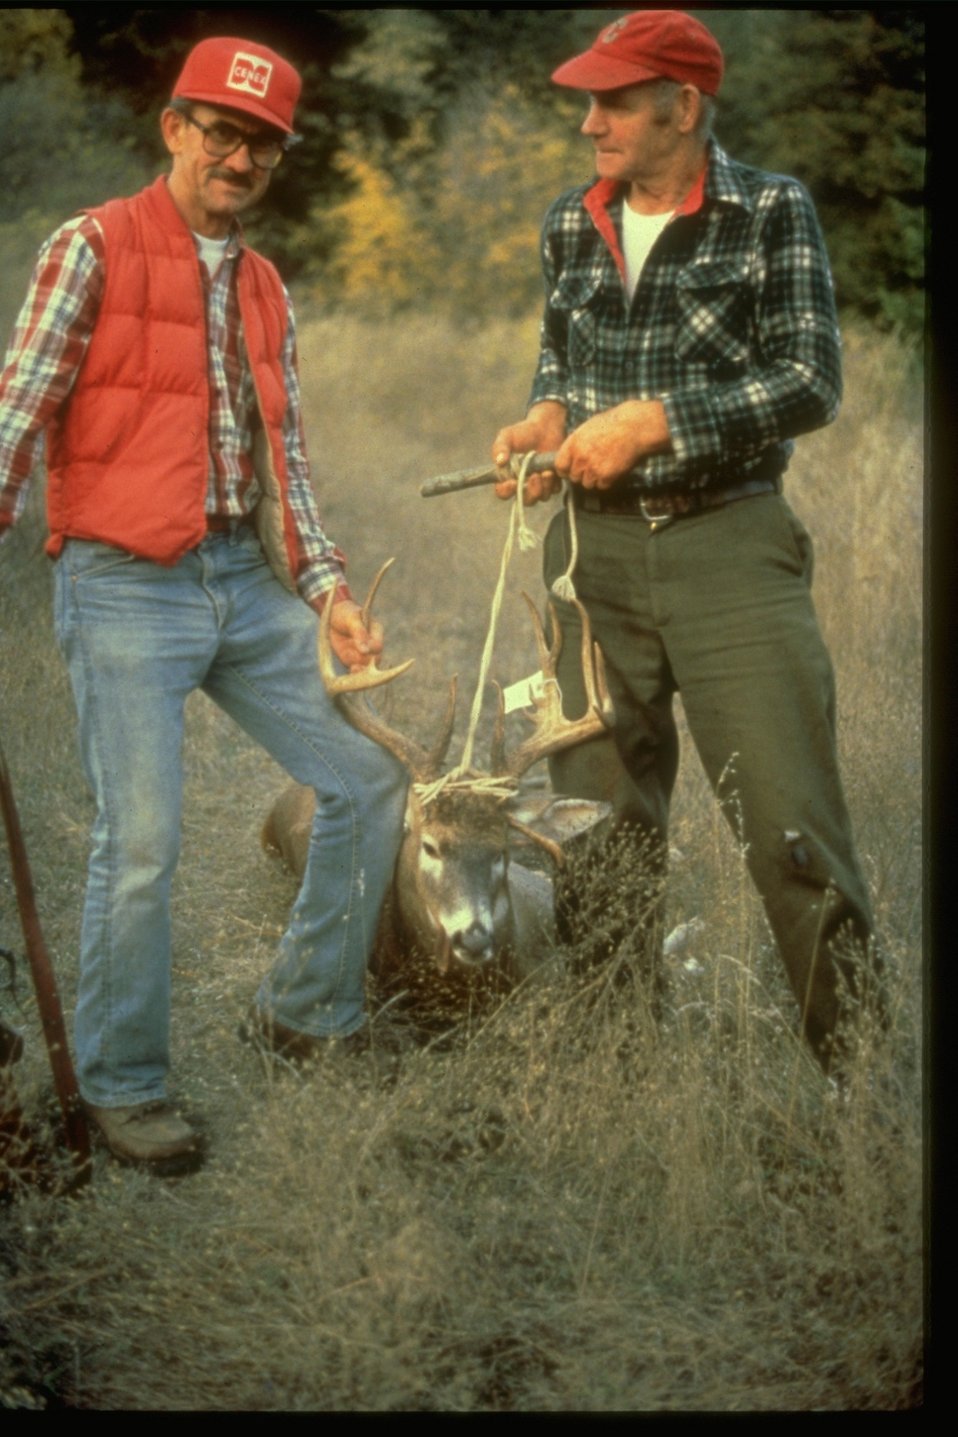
Hunters carrying deer through knapweed.